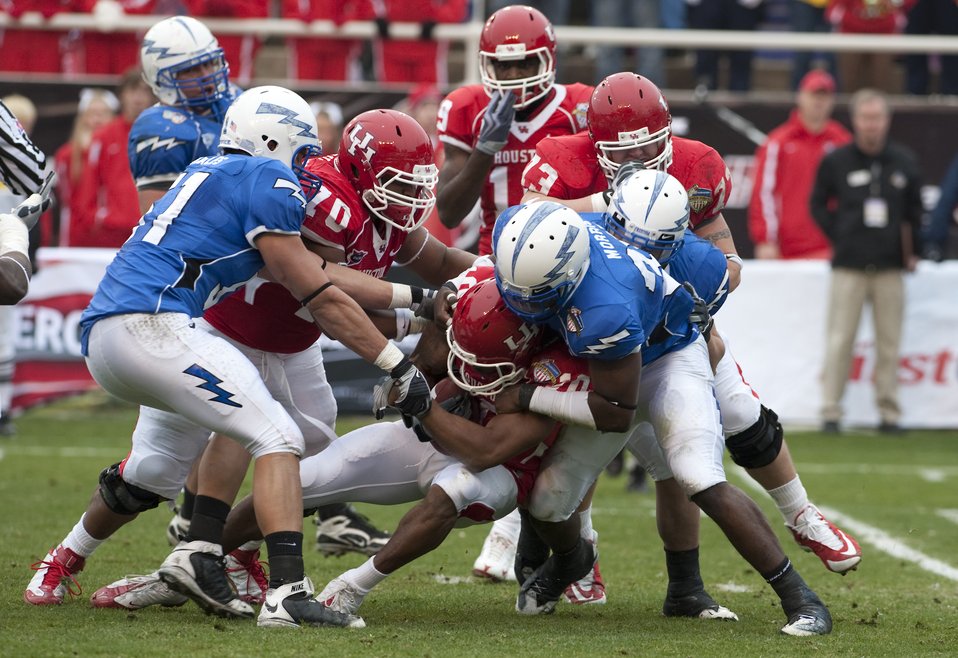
Armed Forces Bowl

The Air Force Academy defensive line tackles University of Houston wide receiver L.J. Castile during the seventh annual Bell Helicopter Armed Forces Bowl at Amon G. Carter Stadium in Fort Worth, Texas, Dec. 31, 2009. The Falcons defeated the Cougars 47-20.